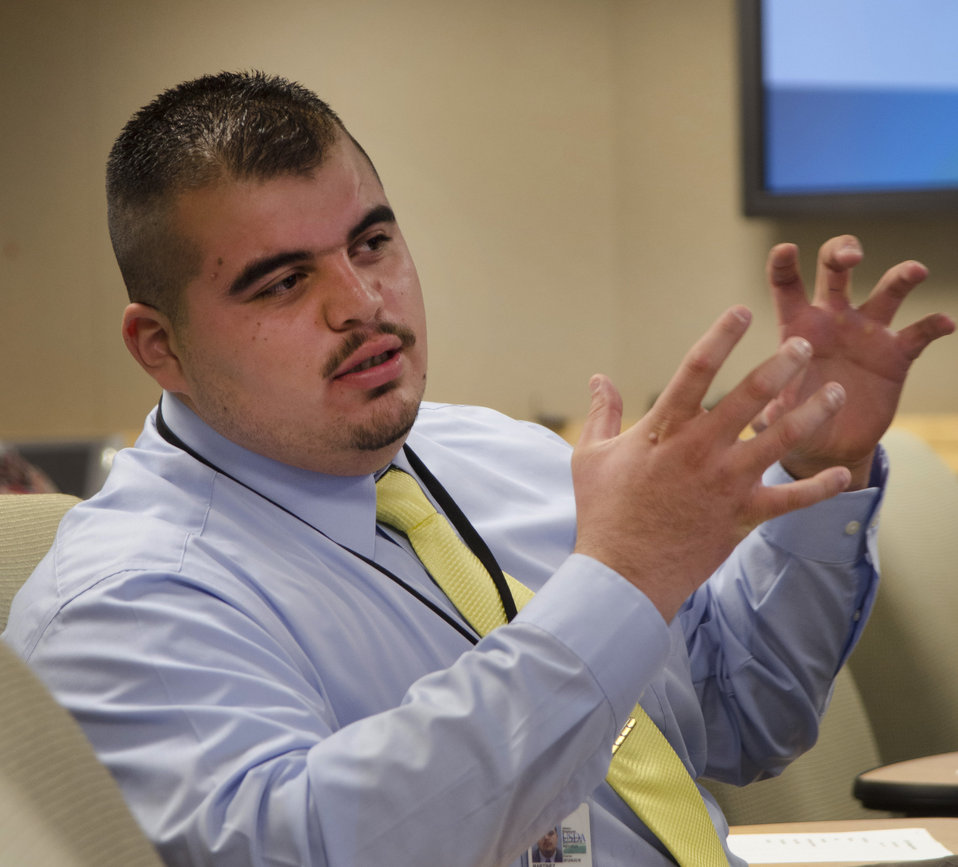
U.S. Department of Agriculture (USDA) National Agricultural Statistic Service (NASS) intern Victor Martinez presents his argument to a question presented by the panel at the USDA Internship Program Listening Session held in USDA’s South Building in Washington, D.C. on Monday, August 7, 2012. The purpose of the USDA Internship Program Listening Session is to provide interns with a forum to express their views about their experiences as a USDA intern. These young people will be among the most promising future USDA leaders and participate in an individual discussion and group session that will develop leadership skills.